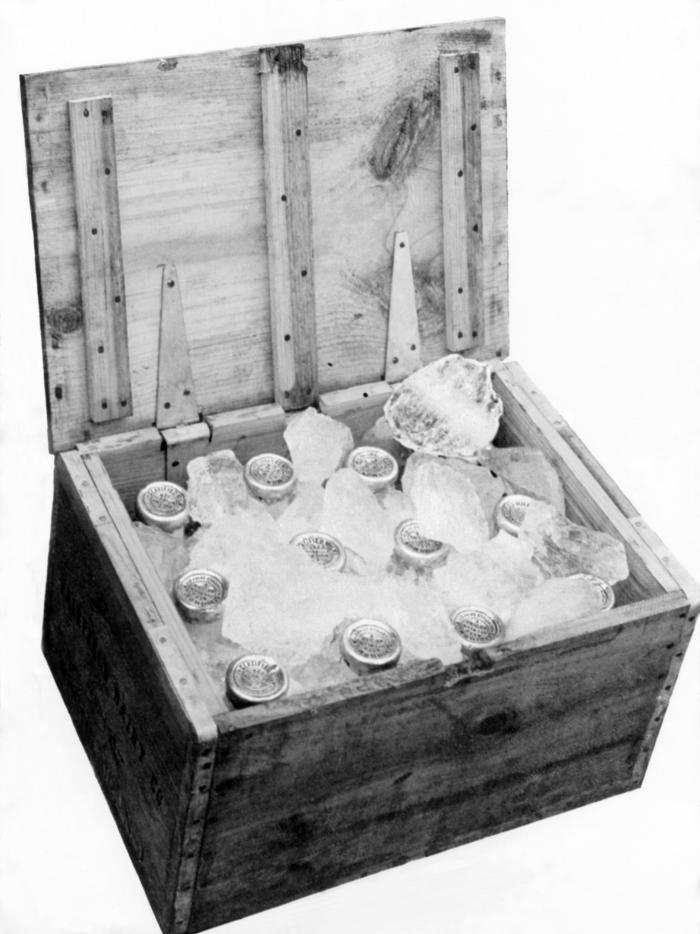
This historic 1929 photograph showed milk bottles that had been prepared for delivery by adding ice to the delivery case. Manufacturers knew that by keeping milk chilled preserved its freshness.